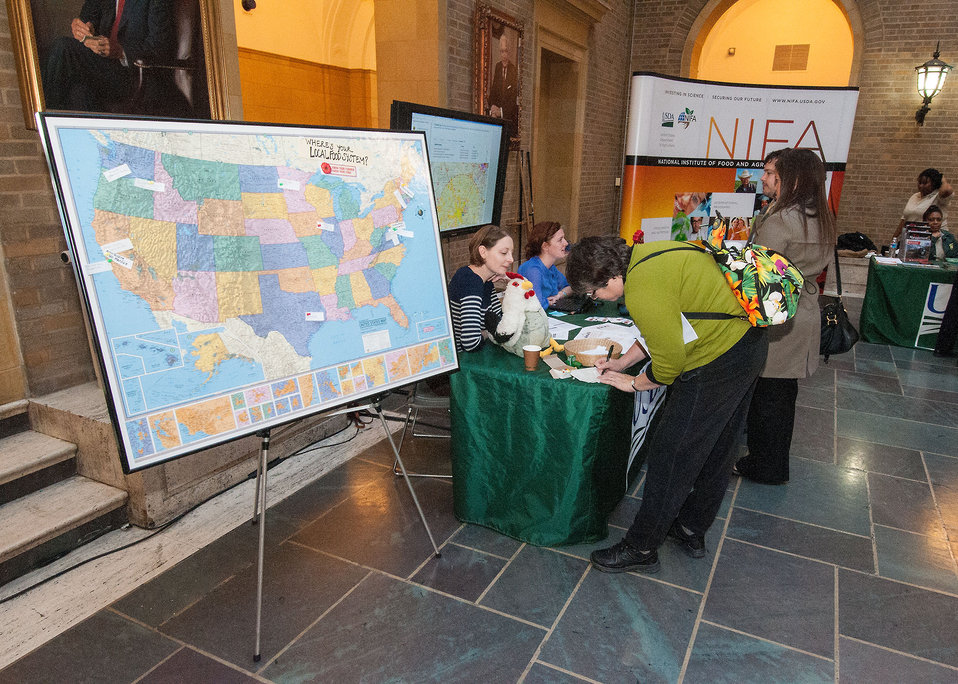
Elanor Starmer (left seated) assists Pat Abler a Washington, D.C. tour guide at the Your Farmer Know Your Food exhibit at the U. S. Department of Agriculture (USDA) Open House on the National Mall, in Washington, D.C., on Friday, Jan. 18, 2013. The Open House was an opportunity to learn more about USDA’s role in agriculture, local and regional food systems, natural resource conservation, nutrition, research and rural development. Abler stopped in to gain more information about USDA for her tours.